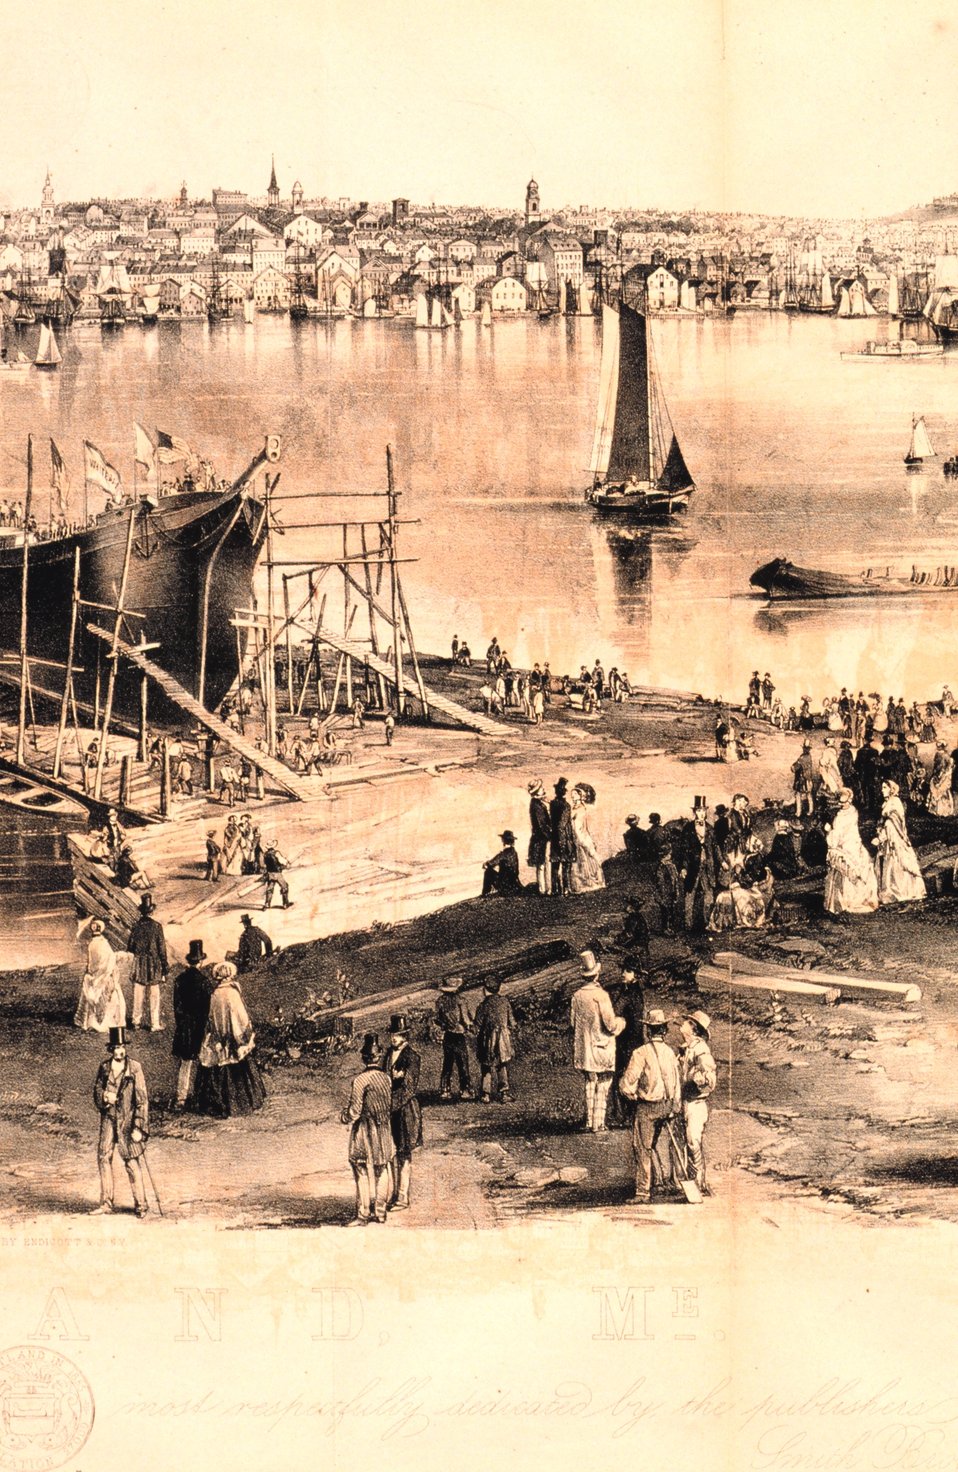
Center -right quarter detail of engraving of Portland Harbor